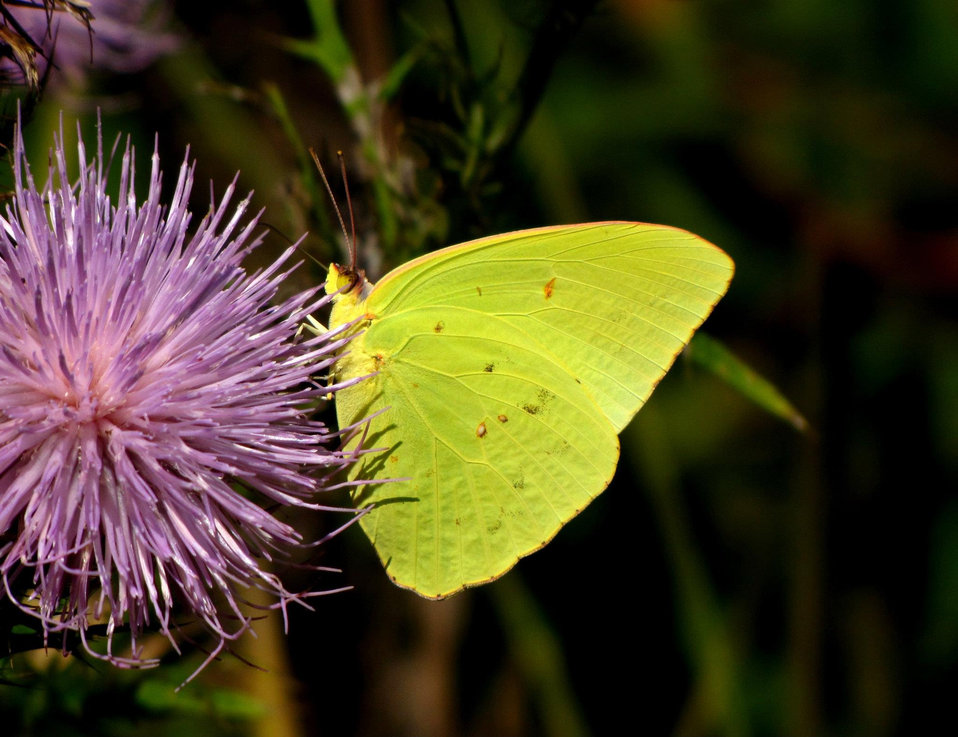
butterfly on clover

Port Louisa National Wildlife Refuge, IA